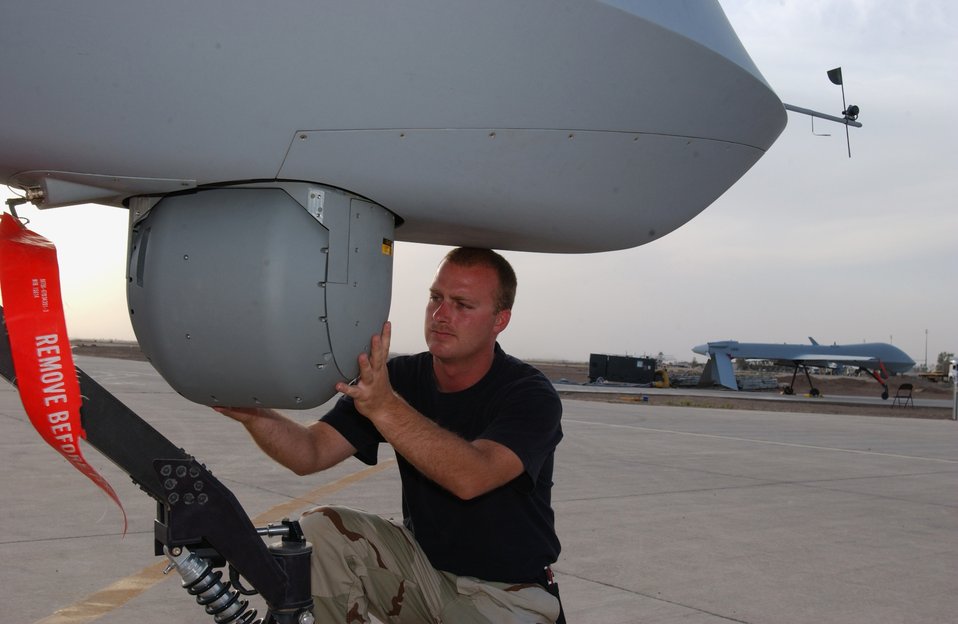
Optic check

BALAD AIR BASE, Iraq -- Airman 1st Class Daniel Gurganious inspects the optical ball on a MQ-1 Predator unmanned aerial vehicle during a routine inspection here May 27. Airman Gurganious is a crew chief with the 46th Expeditionary Reconnaissance Squadron.